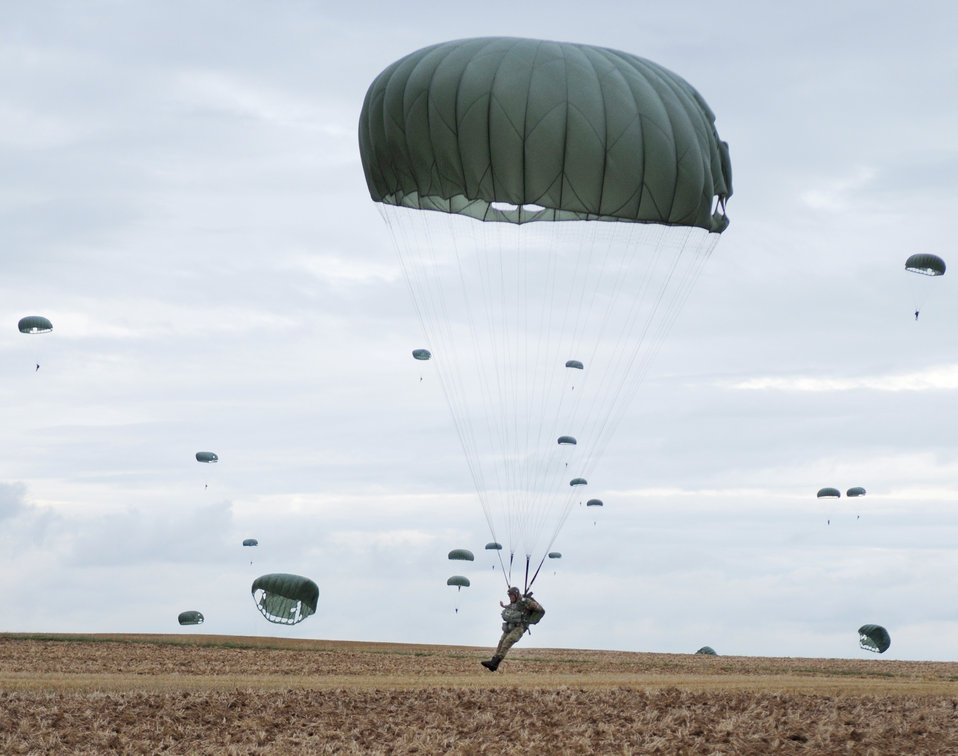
5 NATO countries take part in jump week

Italian army soldier Giovanni Cacciari lands after parachuting out of a C-130 Hercules at the Bunker drop zone Aug. 13 in southwestern Germany. U.S. Soldiers and Airmen performed a combined airborne drop with four other NATO countries during International Jump Week.